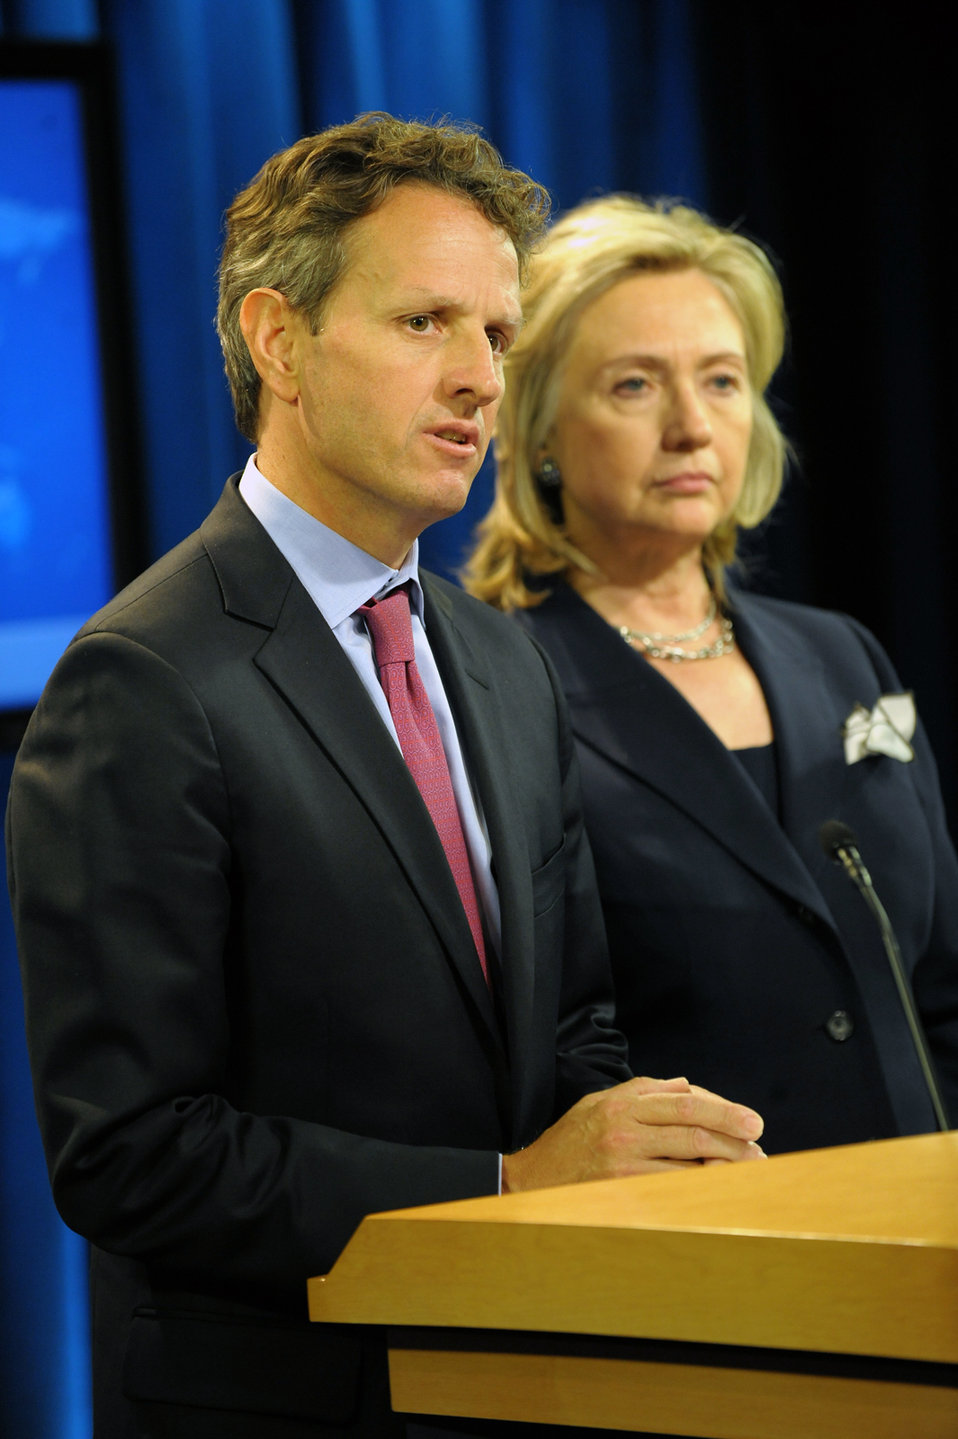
Secretary Geithner and Secretary Clinton Deliver an Announcement of an Executive Order on on Human Rights Designations

U.S. Secretary of the Treasury Timothy Geithner and U.S. Secretary of State Hillary Rodham Clinton deliver a press announcement announcing an executive order on Human Rights Designations in the Press Briefing Room at the U.S. Department of State in Washington, D.C., on September 29, 2010.